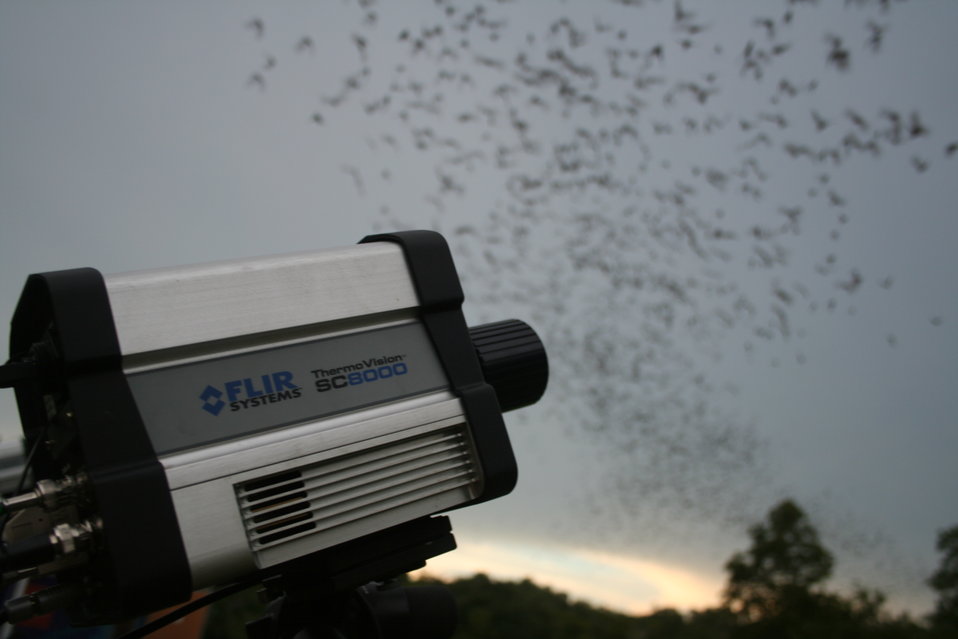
Camera trained on emerging bats